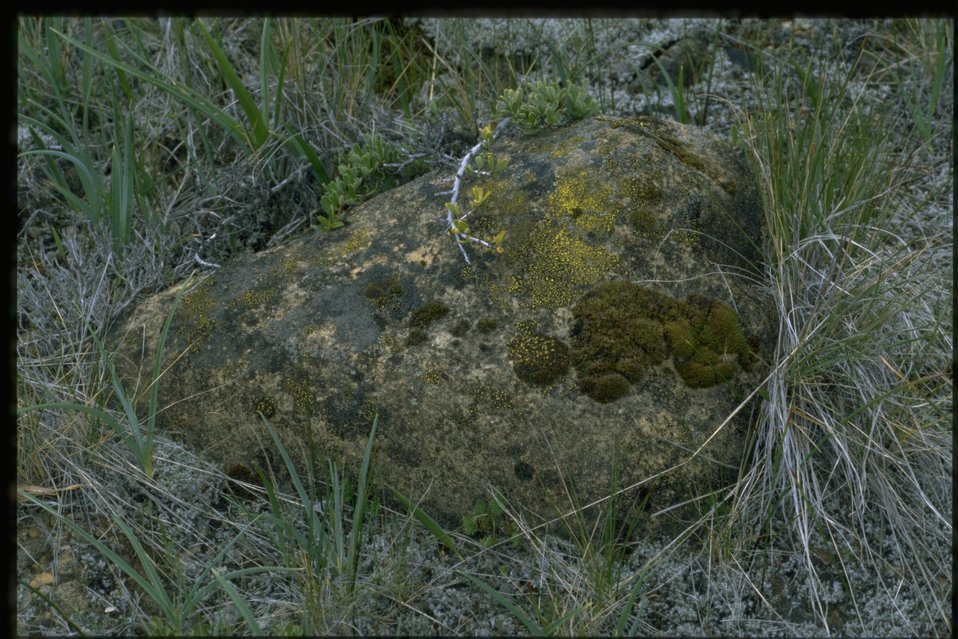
Farshot of Ceanothus (pumila) and lichen.